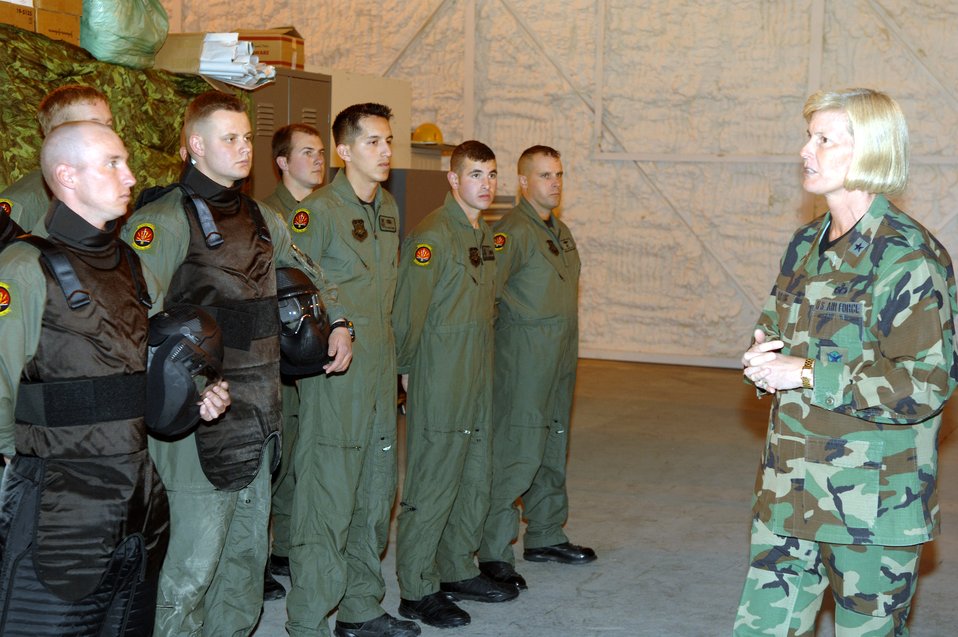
Security-forces director visits Minot

Brig. Gen. Mary Kay Hertog, Air Force security forces director, visits with security forces Airmen from the 91st Space Wing tactical response force May 2 during a tour of Minot Air Force Base, N.D.